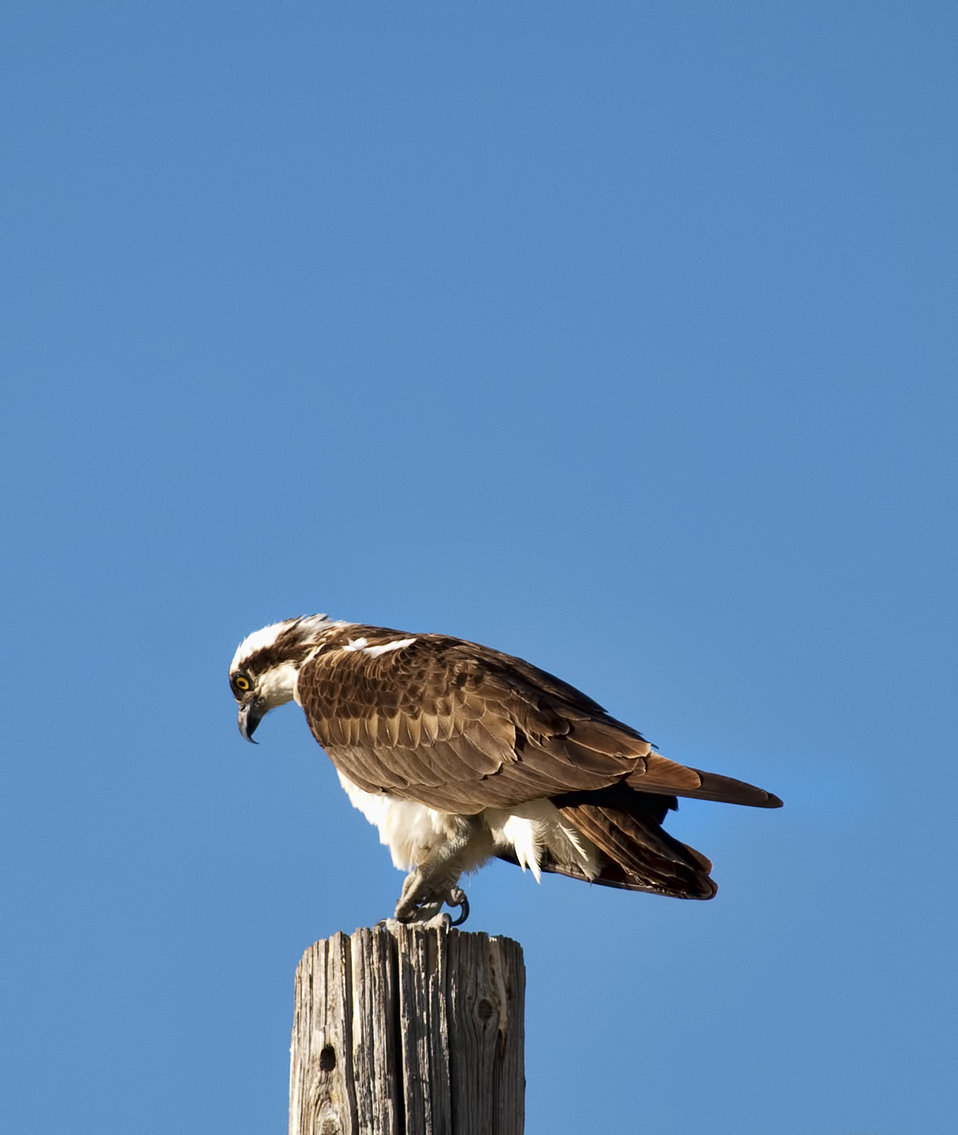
A Formidable Pose

An osprey strikes a formidable pose against a brilliant blue sky.

Credit: USFWS / BJ Baker, National Elk Refuge volunteer